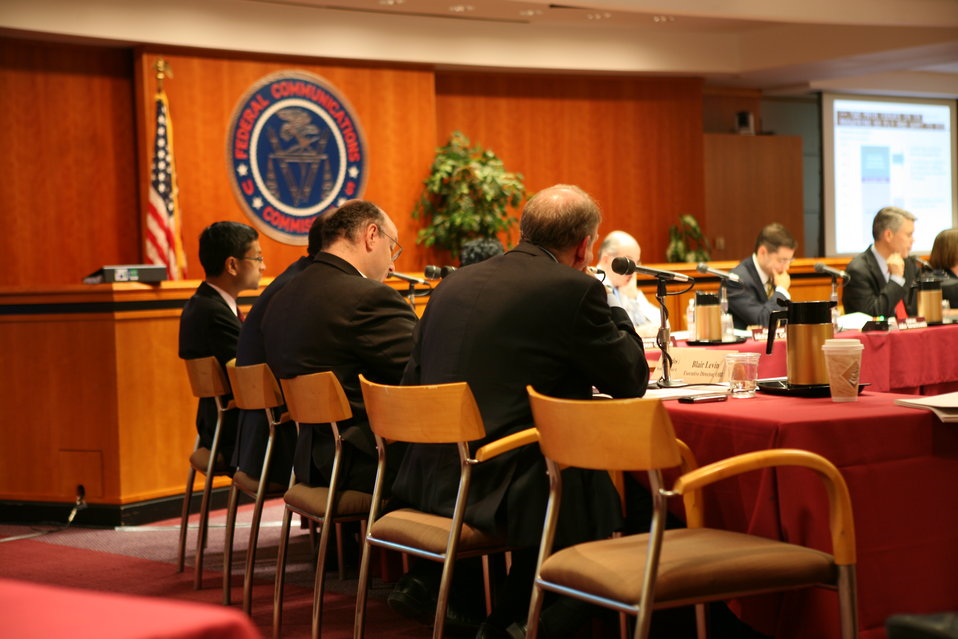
Broadband Midterm Review 9-29-09